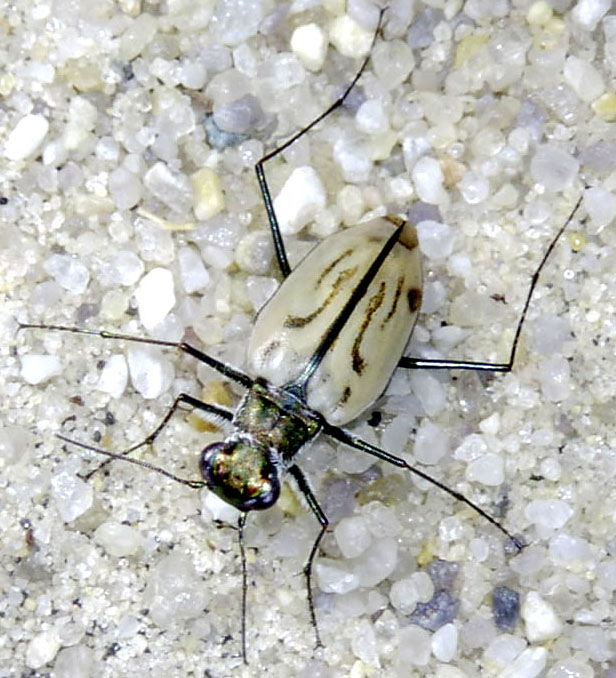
Northeastern beach tiger beetle

This beetle is large and cream-colored. According to the Virginia Department of Conservation and Recreation, it is the fastest land animal of its size. It spends most of its two years of life as a larva buried in the sand.

Only pristine beaches with little environmental pressure can sustain a tiger beetle population. The beetle eats sand fleas, lice, flies and ants; its demise warns of imbalance in the habitat.